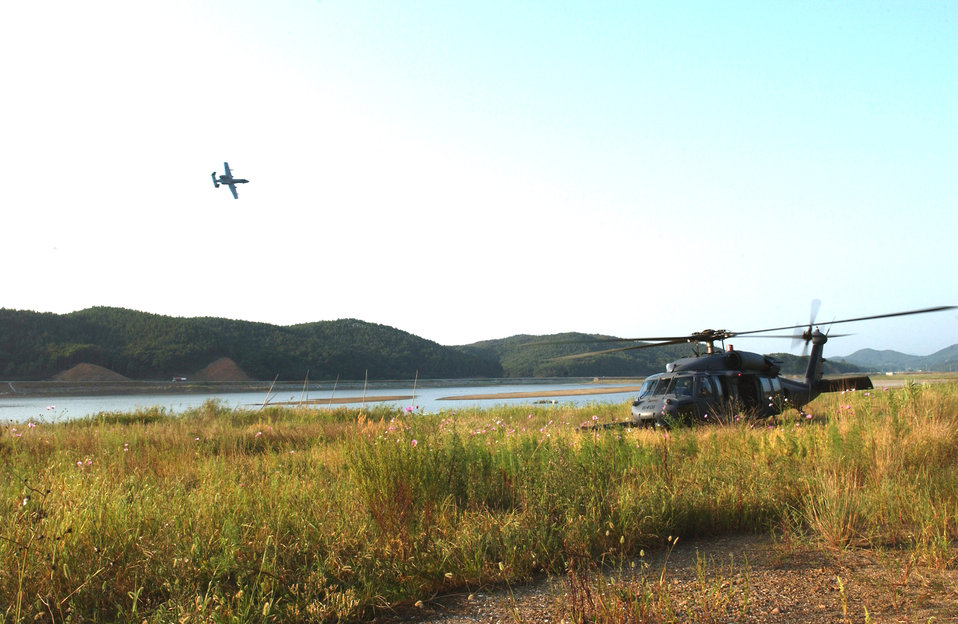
Life-saving training at Osan AB

An HH-60 Pavehawk crew prepares to recover two survivors while an A-10 Thunderbolt II flies overhead during combat search and rescue training Sept. 21 near Osan Air Base, South Korea. Annual training is conducted by survival, evasion, resistance and escape instructors to reacquaint aircrew members with combat search and rescue procedures and techniques.